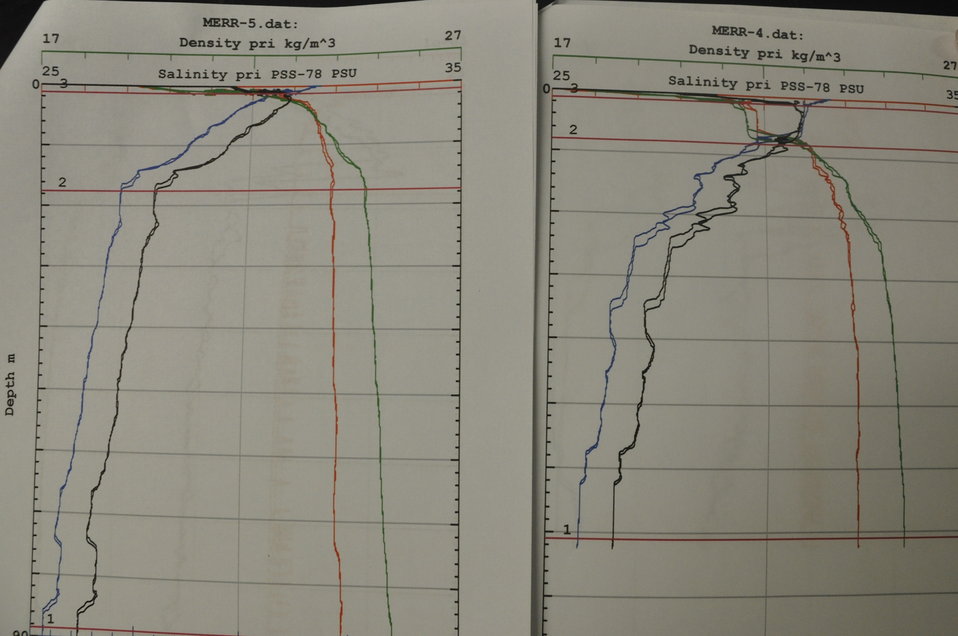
July, August 2009 CTD: Conductivity, Temperature, Depth report

When marine scientists deploy a CTD off the side of the Bold, certain results from the water column can be seen right away in the onboard computer lab. The CTD transmits this information electronically, giving scientists a quick analysis of overall water quality at the depths they choose.